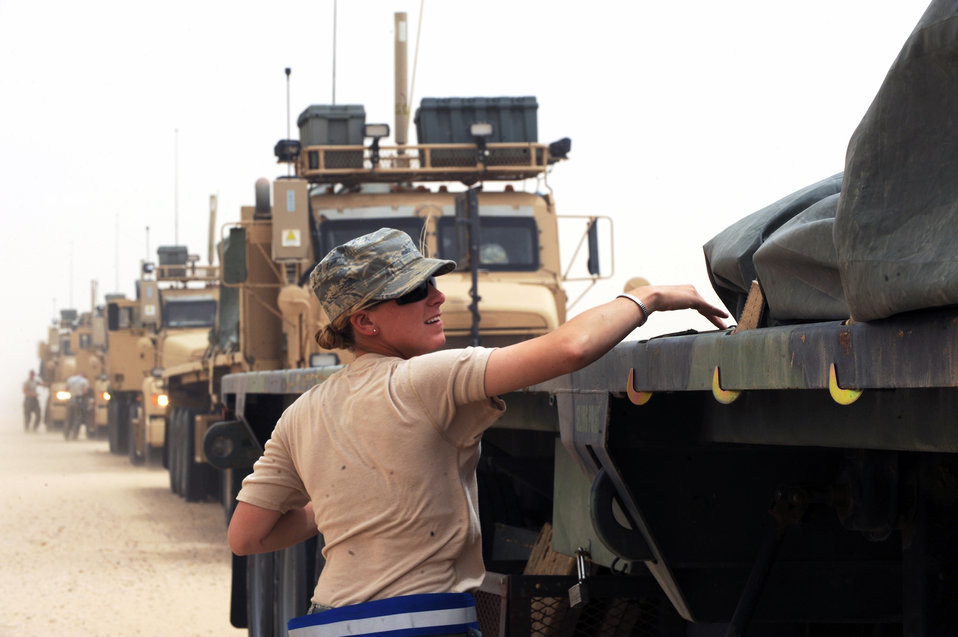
Convoy mission

Senior Airman Kelly McLain checks for loose tarps or straps as part of a quick roadside stop during a local convoy mission in Southwest Asia. Airman McLain is a vehicle operator with the 387th Expeditionary Logistics Readiness Squadron.